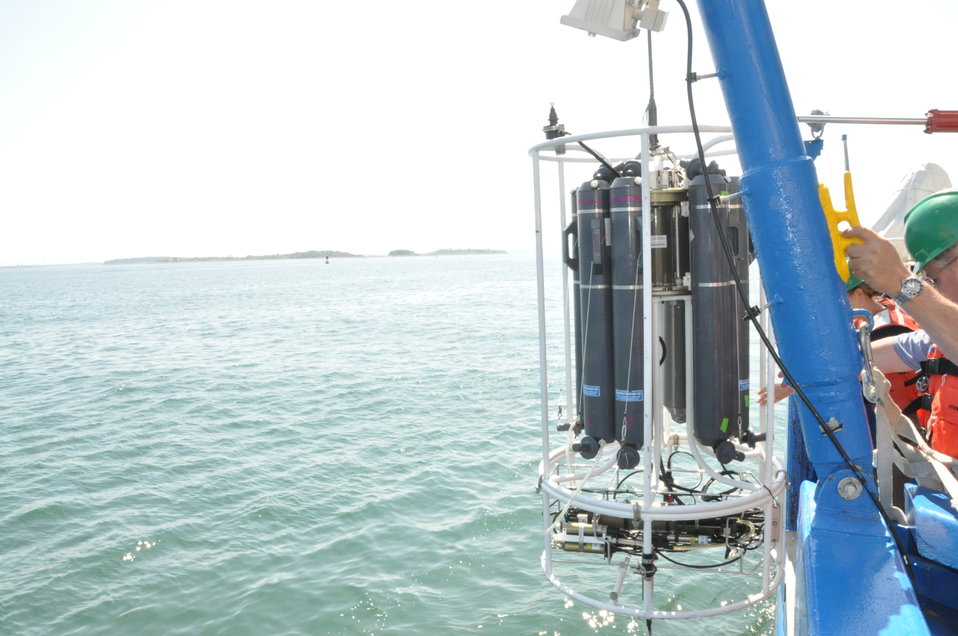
August 5, 2011 First station stop out in Boston Harbor